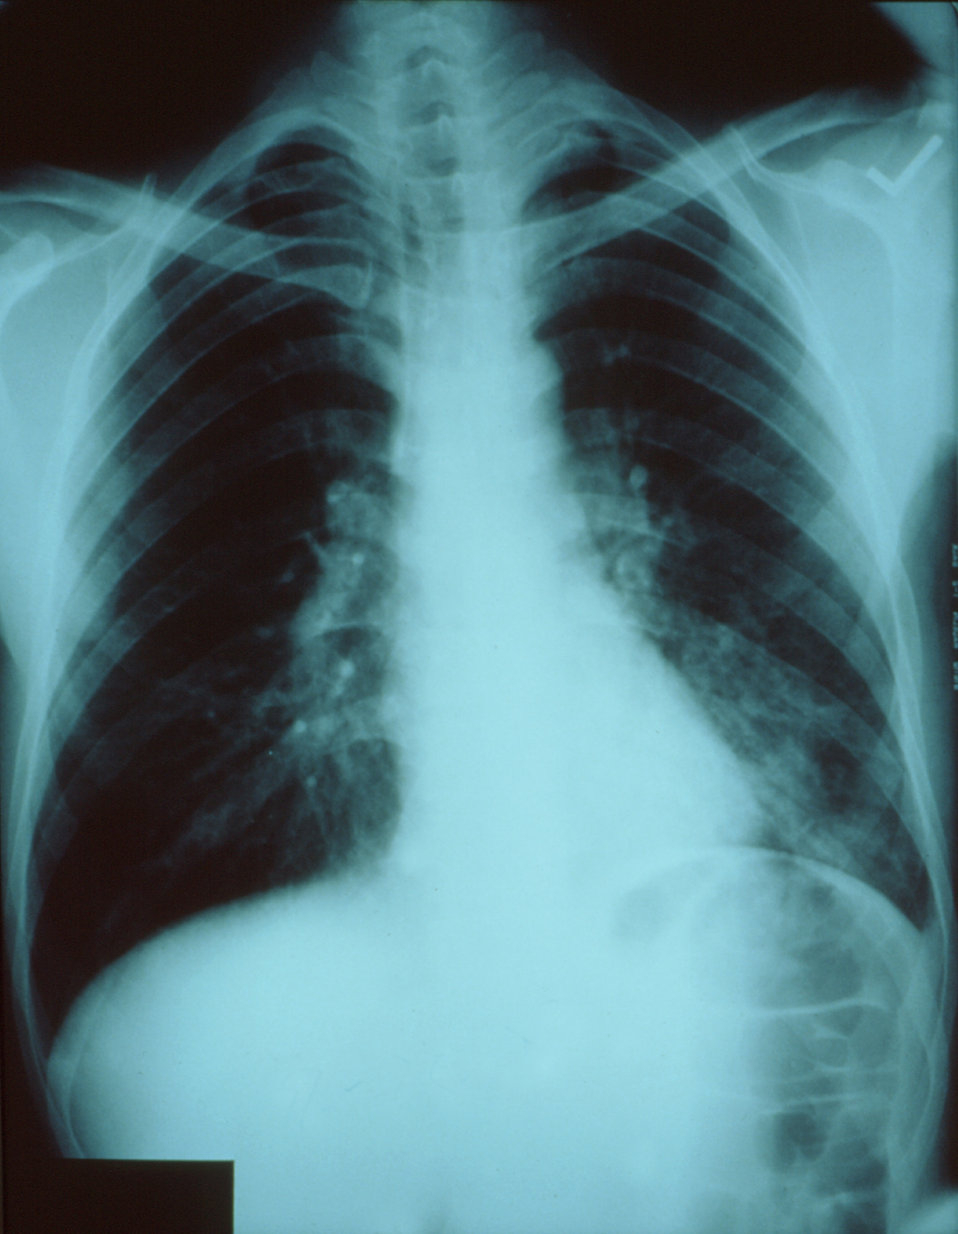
This AP chest x-ray shows pneumonia of the left lower lobe with early consolidation, the etiology of which was unknown.